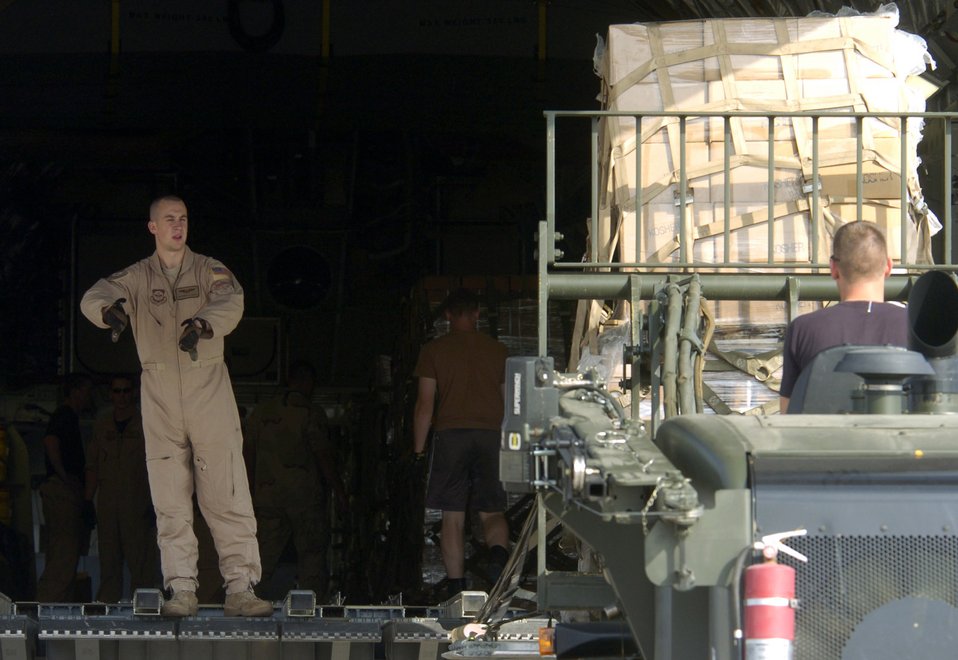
Supplies bound for Cyprus

Senior Airman Donnie McCorkle guides a loaded forklift off the ramp of a C-17 Globemaster III in Cyprus on July 22. C-17 crews from the 816th Expeditionary Airlift Squadron are filling their cabins with pallets of supplies such as water, Meals, Ready to Eat and cots for the American citizens leaving Lebanon. This C-17 transported 17 pallets, about 64,000 pounds, of cargo to Cyprus on this mission. Airman McCorkle is a loadmaster with the 816th EAS.